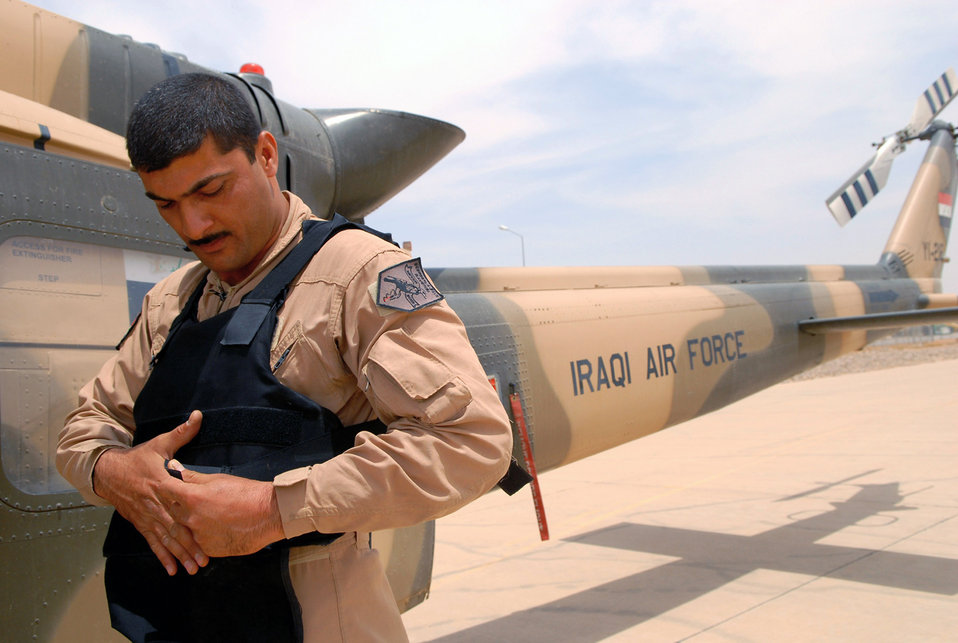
Iraqi air force performs medical evacuation

An Iraqi air force aerial gunner dons his body armor before flying on an Iraqi air force medical evacuation mission in an Iraqi air force Huey II helicopter May 14 from the Air Force Theater Hospital at Balad Air Base, Iraq. The mission transported patients from the Air Force Theater Hospital to the U.S. Army's 86th Combat Support Hospital in Baghdad.